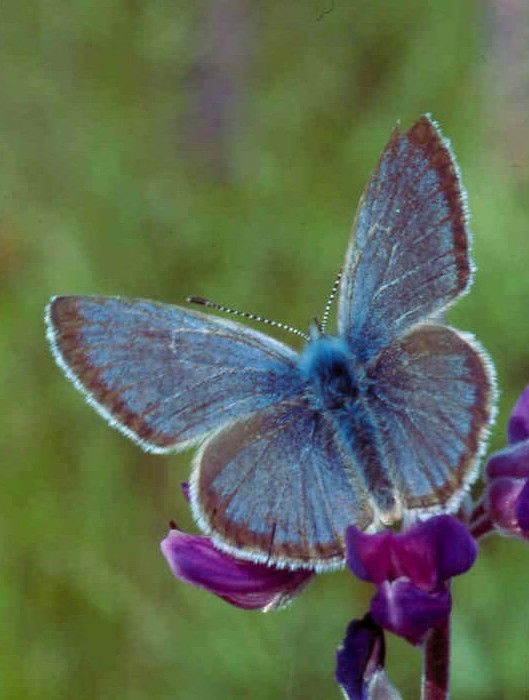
Fender's blue butterfly on lupine

endangered
Willamette Valley National Wildlife Refuge Complex, OR